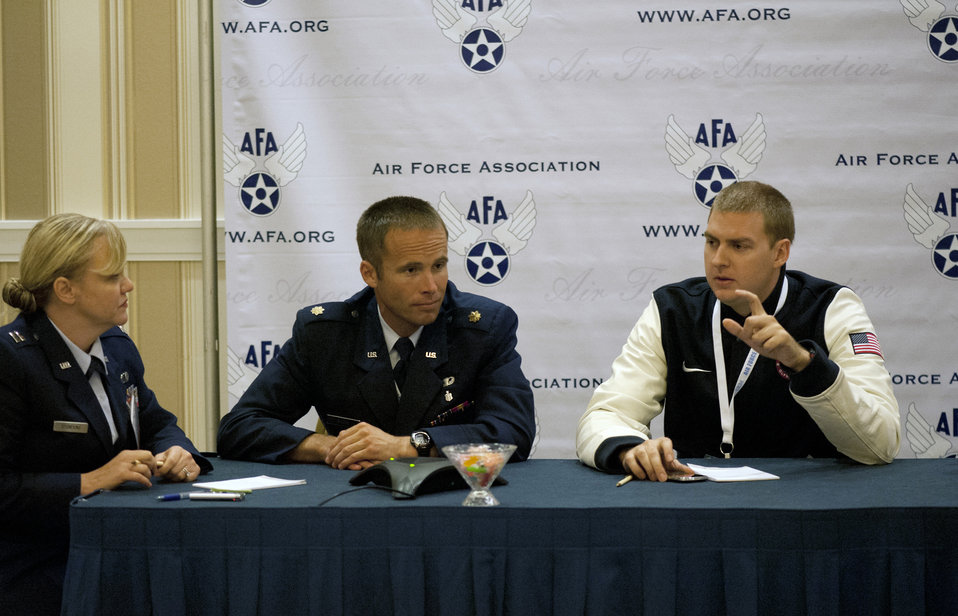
WCAP bloggers' roundtable

From right: U.S. Air Force Capt. Seth Kelsey speaks while Maj. (Dr.) James Bales and Capt. Shannon Stoneking, the moderator, listen as they take part in the Air Force World Class Athlete Bloggers' Roundtable during the Air Force Symposium in Washington, Sept. 17, 2012. Kelsey is assigned to the 310th Force Support Squadron, Buckley Air Force Base, Colo., and Bales is with the 21st FSS, Peterson AFB, Colorado.